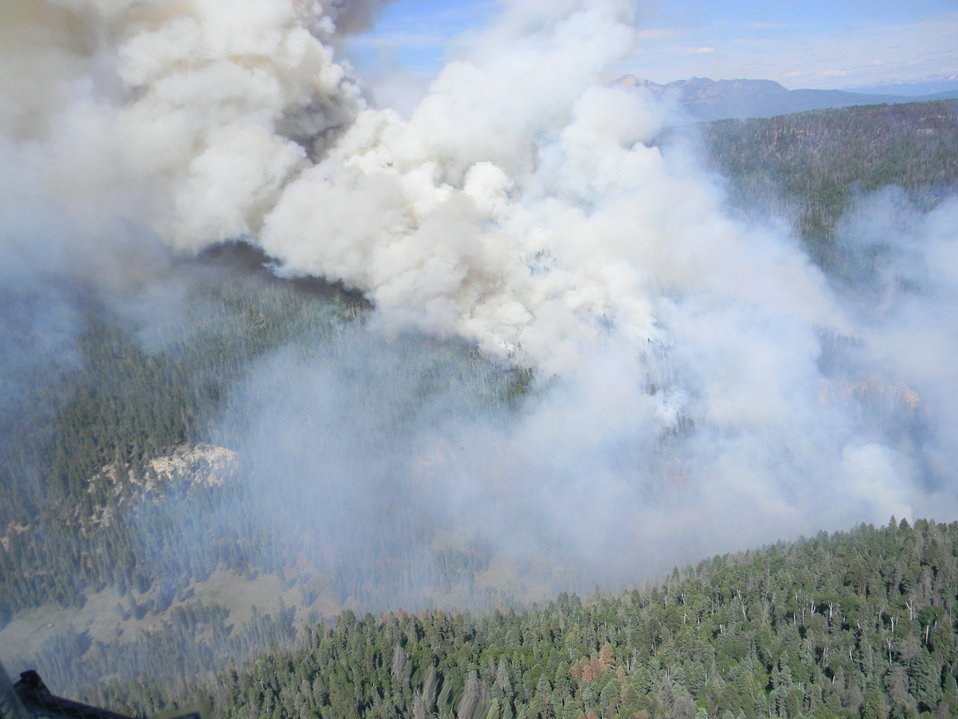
The Little Sand Wildfire burns in the San Juan National Forest near Pagosa Springs, CO, on Tuesday, June 5, 2012. The wildfire was started by a lightening strike on May 13, 2012. The fire is in rugged and inaccessible terrain, north of the Piedra River, and is currently estimated at 14,224 acres with 30% containment as of June 20, 2012.